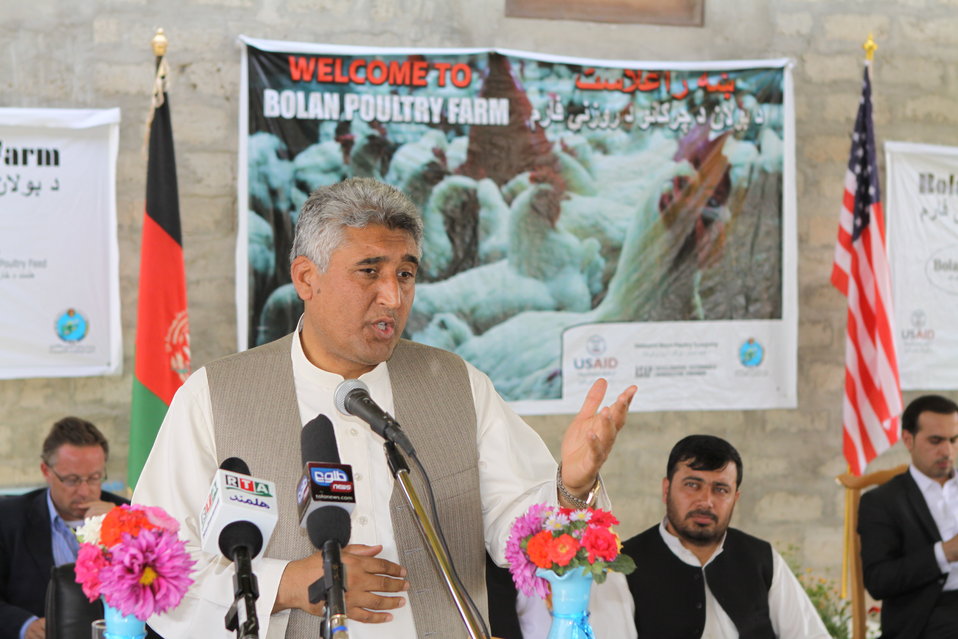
Bolan Poultry Farm